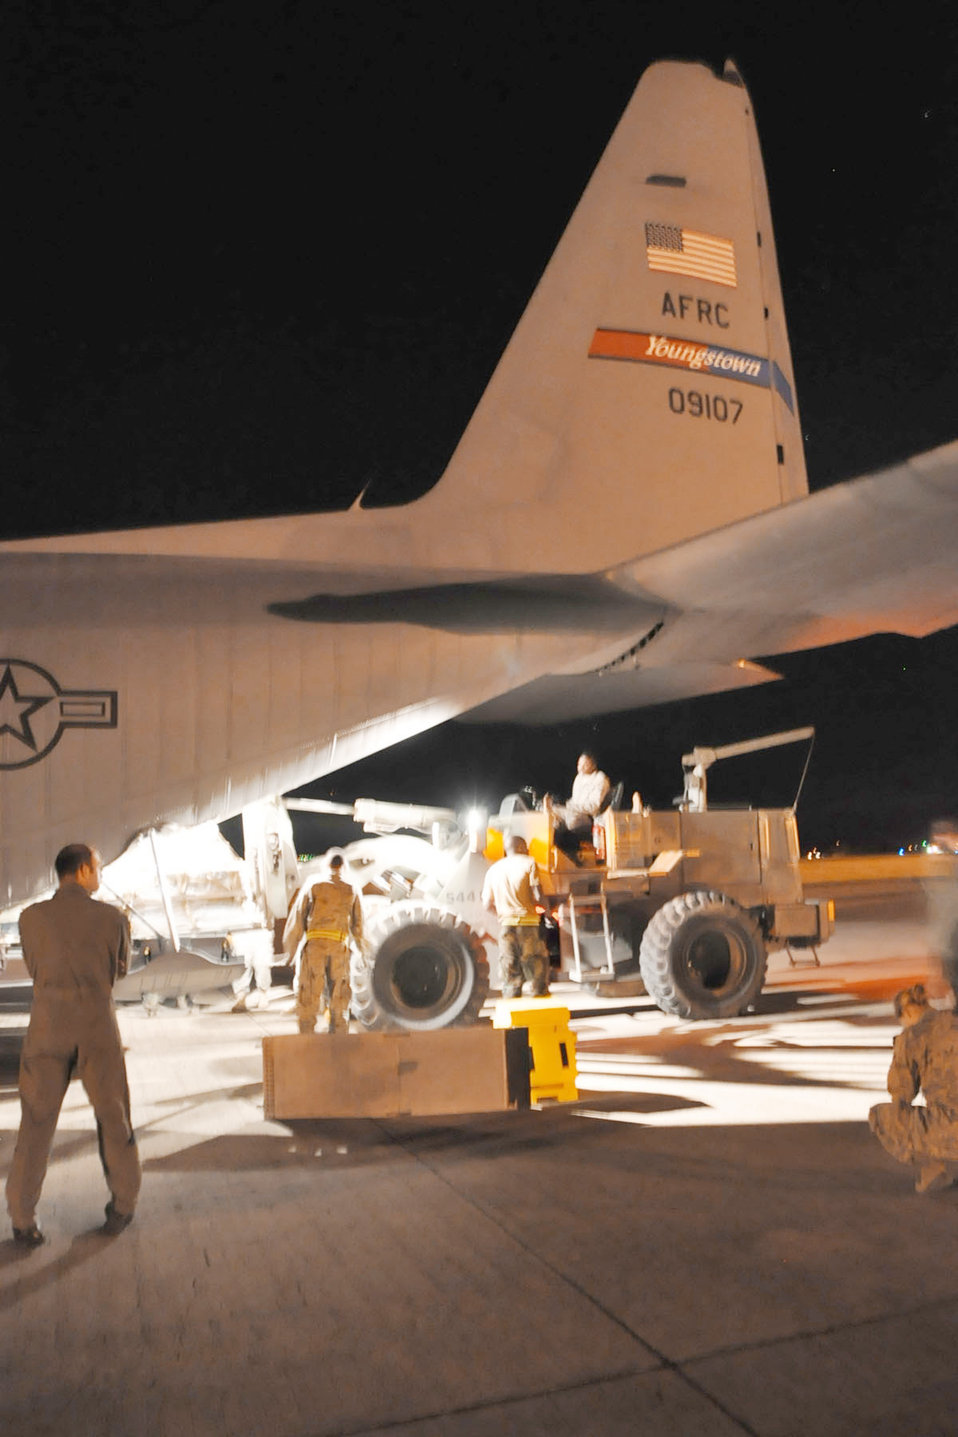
Medical mission to Haiti

Maj. Joe George, assigned to the 910th Operations Support Squadron, watches as a pallet is loaded aboard a C-130H Hercules at Soto Cano Air Base, Honduras, Jan. 17, 2010. The cargo is headed for Port-au-Prince, Haiti, as part of the massive international relief effort to aid the Haitian people after a devastating 7.0-magnitude earthquake. Major George is pilot of the C-130H Hercules and commander of a 12-person crew from the Air Force Reserve Command's 910th Airlift Wing based at Youngstown Air Reserve Station, Ohio.